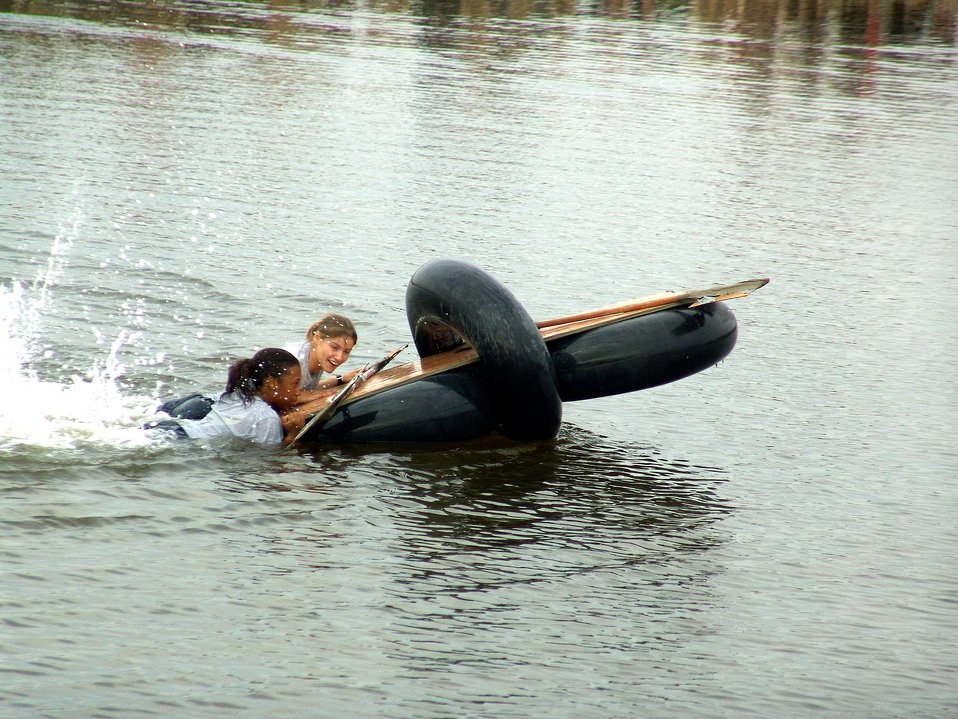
Rapid rafting

CAMP BUCCA, Iraq (AFPN) -- Staff Sgt. Ashanti Charles and Airman 1st Class Christie Swehle resorted to kicking their way back to shore when their boat did not finish the first-ever Camp Bucca Raft Race. The 886th Expeditionary Security Forces Squadron troops made up one of 17 teams to enter the event -- held on a small pond here Nov. 13. Both Airmen are deployed from Langley Air Force Base, Va.